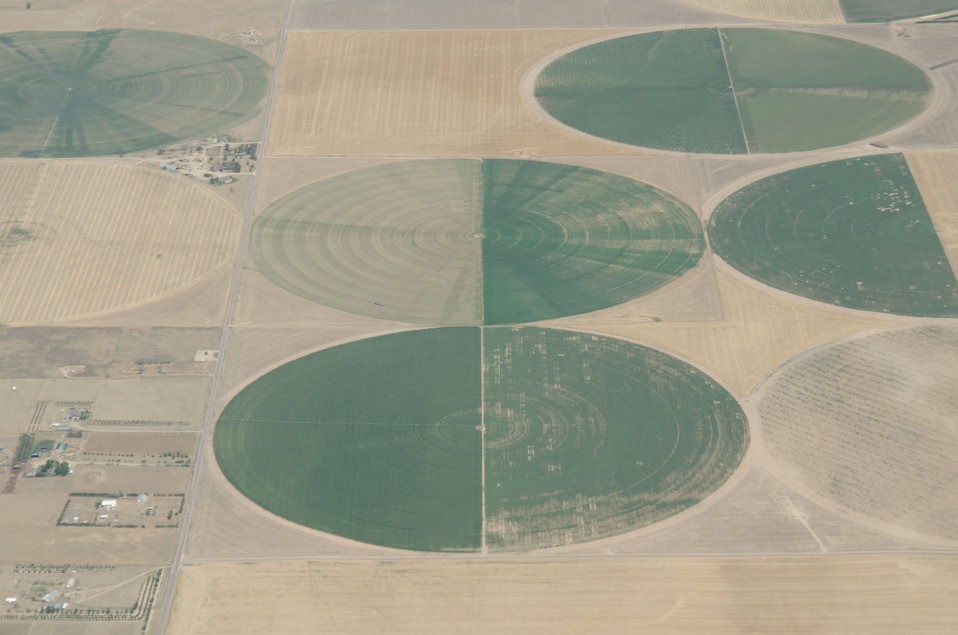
Aerial views of drought affected Colorado farm lands, 83 miles east of Denver, Colorado on Saturday, July 21, 2012. Green areas are irrigated, the yellow areas are dryland wheat crops.